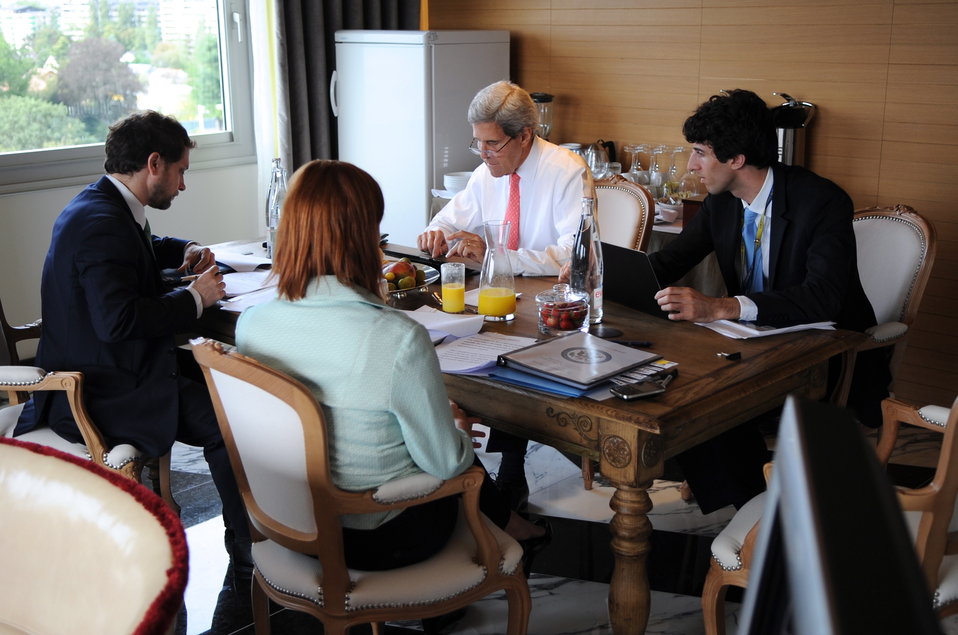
Secretary Kerry and Staff Update Statement to News Media

11:24 a.m., September 14, 2013 - U.S. Secretary of State John Kerry, accompanied by Deputy Chief of Staff Jonathan Finer, Spokesperson Jennifer Psaki, and Deputy Speechwriter Andrew Imbrie, taps on his iPad as he updates a draft statement to the news media after he and his Russian counterpart reached an agreement to eliminate Syrian chemical weapons.